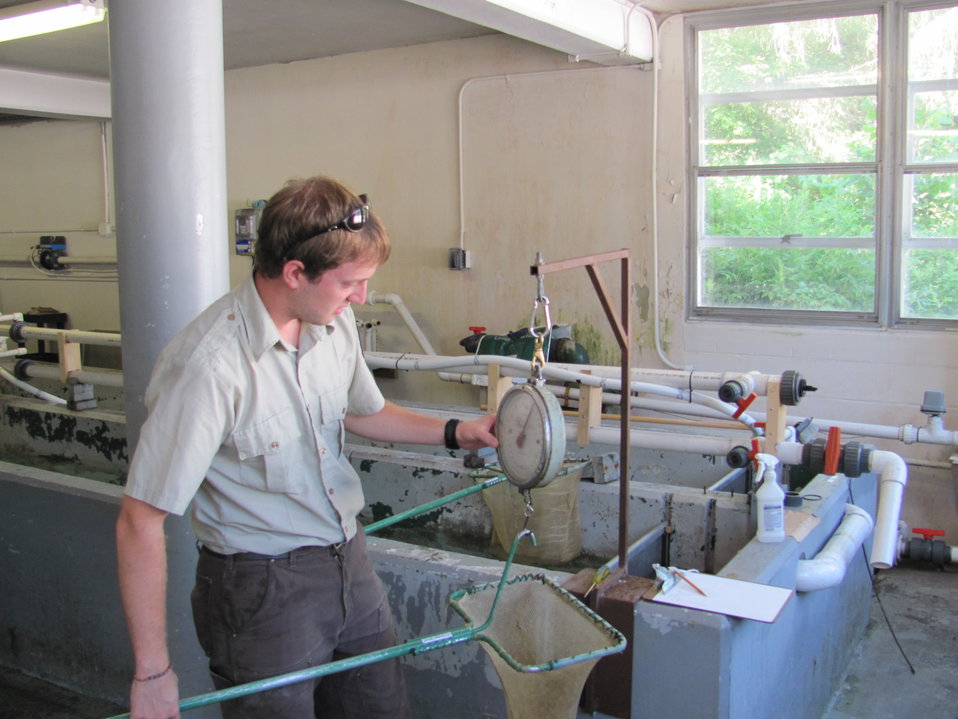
Field work at the Lake Champlain Fish and Wildlife Resources Office.